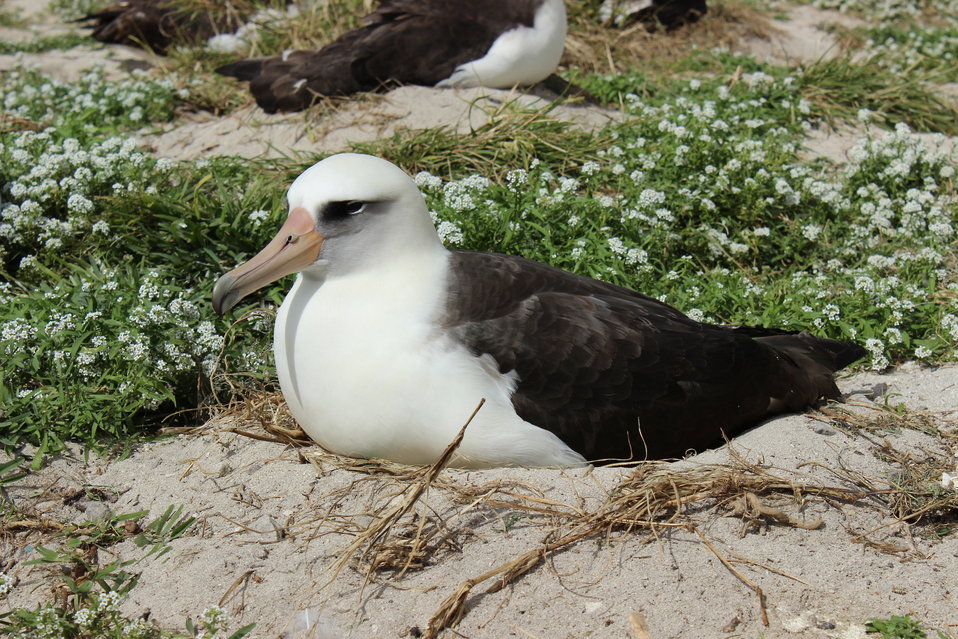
Wisdom broods her chick at Midway Atoll NWR.

A Laysan albatross known as “Wisdom” – at least 63 years old – is once again busy rearing a chick on Midway Atoll National Wildlife Refuge within the Papahānaumokuākea Marine National Monument.